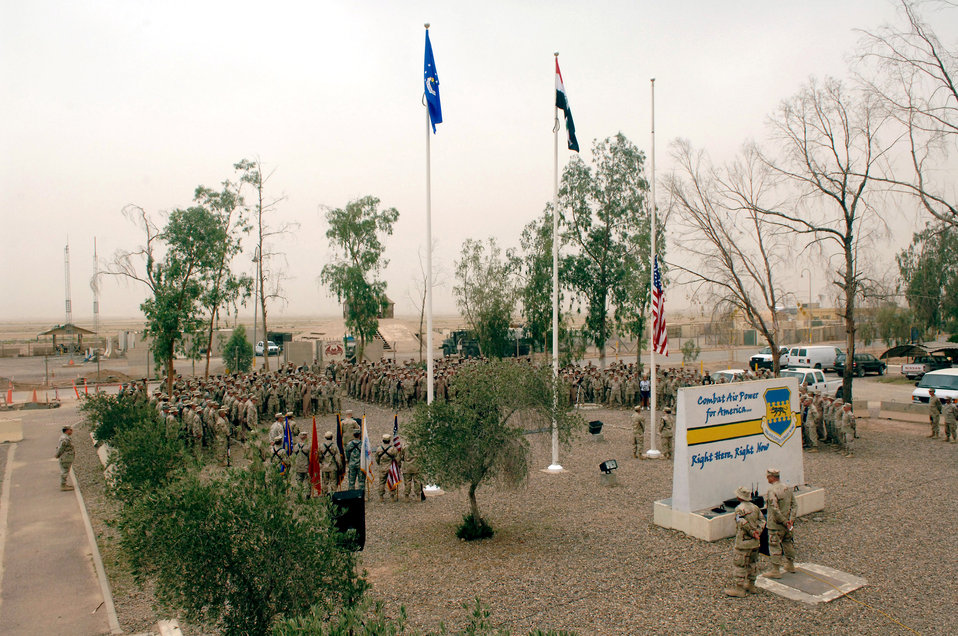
Balad Airmen honor fallen on Memorial Day

More than 300 Airmen from the 332nd Air Expeditionary Wing share a moment of silence in front of the Fallen Airman Memorial May 28 at Balad Air Base, Iraq. Thirty-three Airmen's names are inscribed on the memorial, including the wing's most recent loss, Staff Sgt. John Self. The sergeant, a security forces defender with the Det. 3, 732nd Expeditionary Security Forces Squadron at Camp Liberty, Baghdad, was killed May 14 while conducting a combat patrol in the Rasheed District of Baghdad.